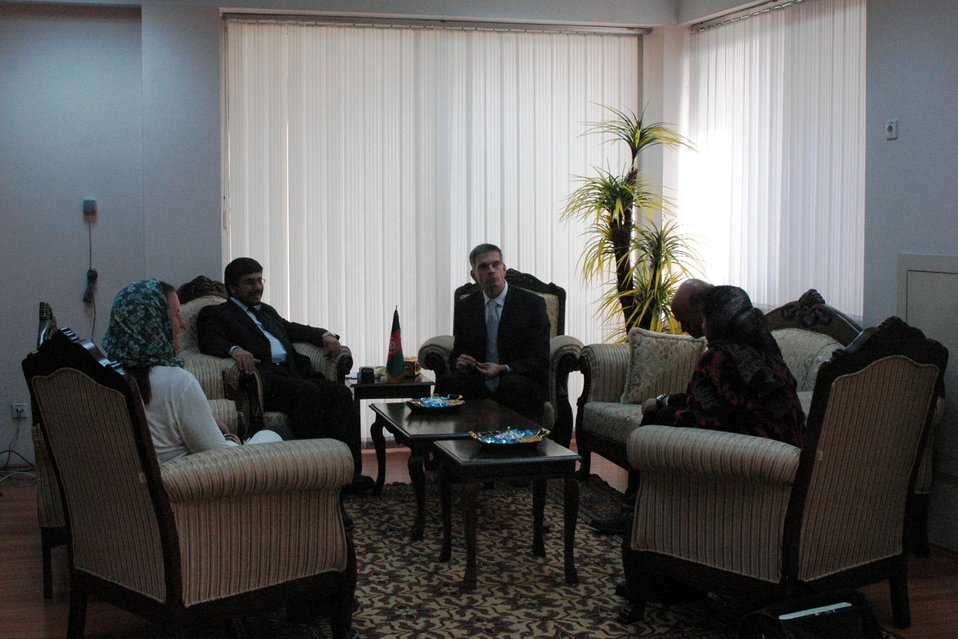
Community Based Stabilization Grants Ceremony, December 7, 2010